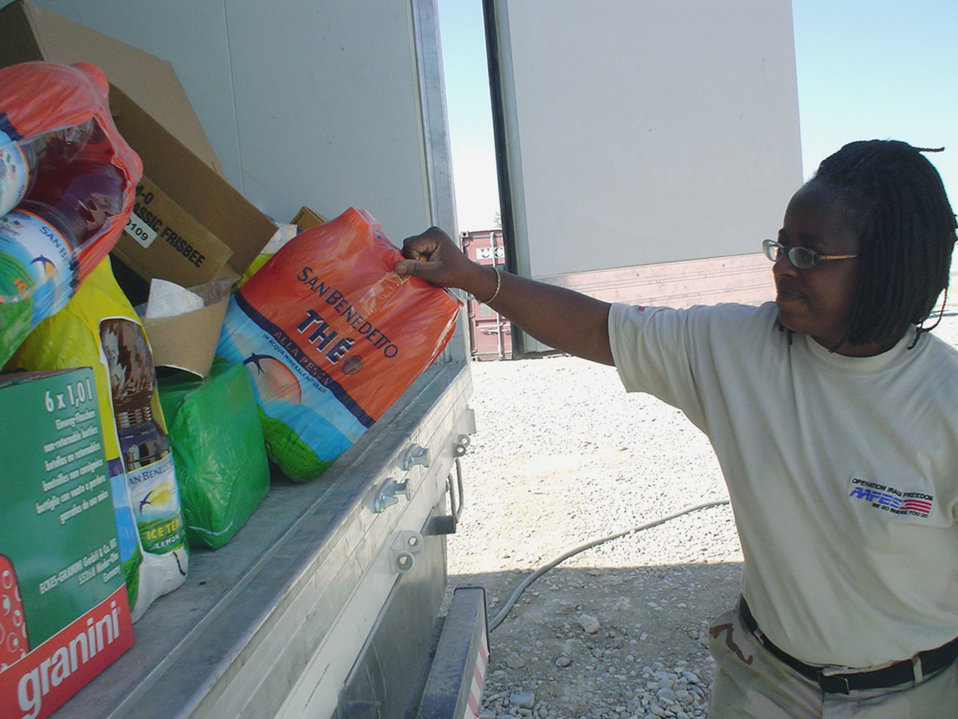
AAFES goes where troops are

TALLIL AIR BASE, Iraq -- Leconte Heard sorts through items for the Army and Air Force Exchange Service shoppette in Air Force